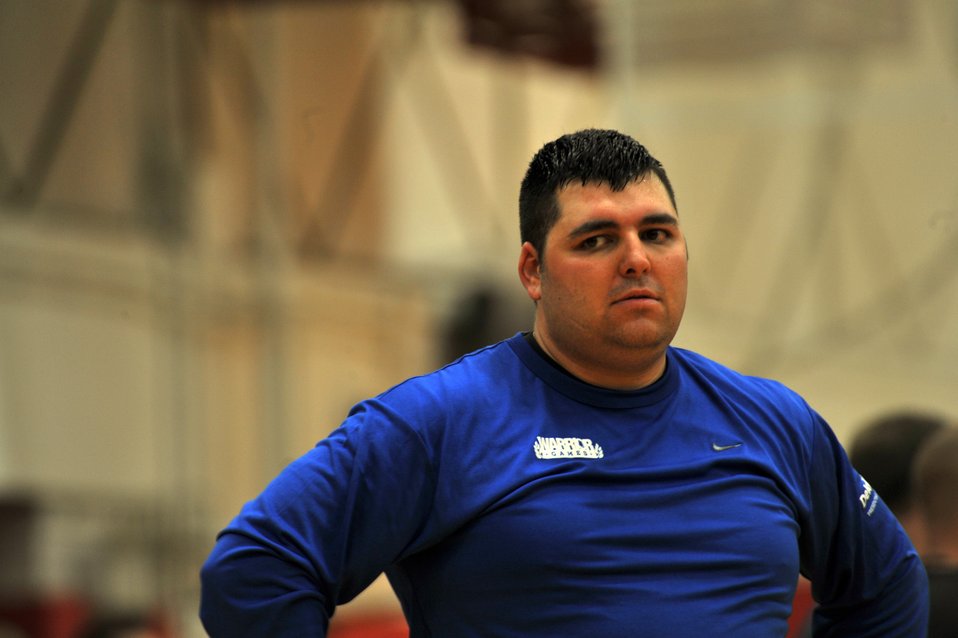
AF Volleyball

Ricky Tackett takes a break from the Air Force team during the Warrior Games volleyball match against the Army May 12, 2010 at the Olympic Training Center, Colorado Springs. The Air Force went on to win the game 15-7. The Warrior Games competition began May 10 and finishes on May 14, 2010 at the U.S. Olympic Training Center in Colorado Springs.